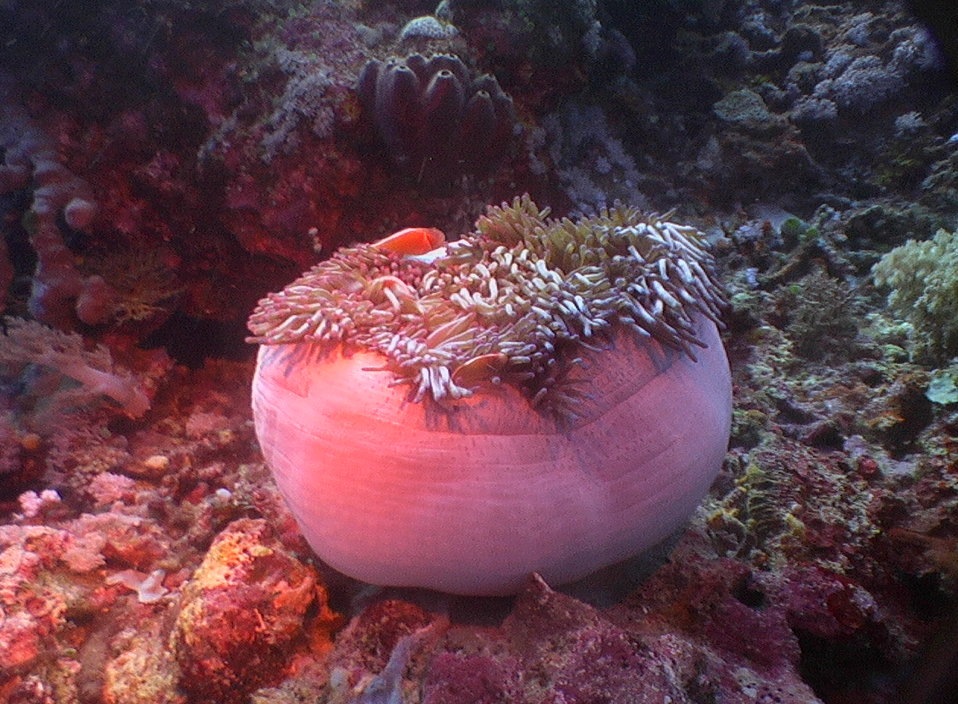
Heteractis magnifica, Synonym Radianthus Ritteri